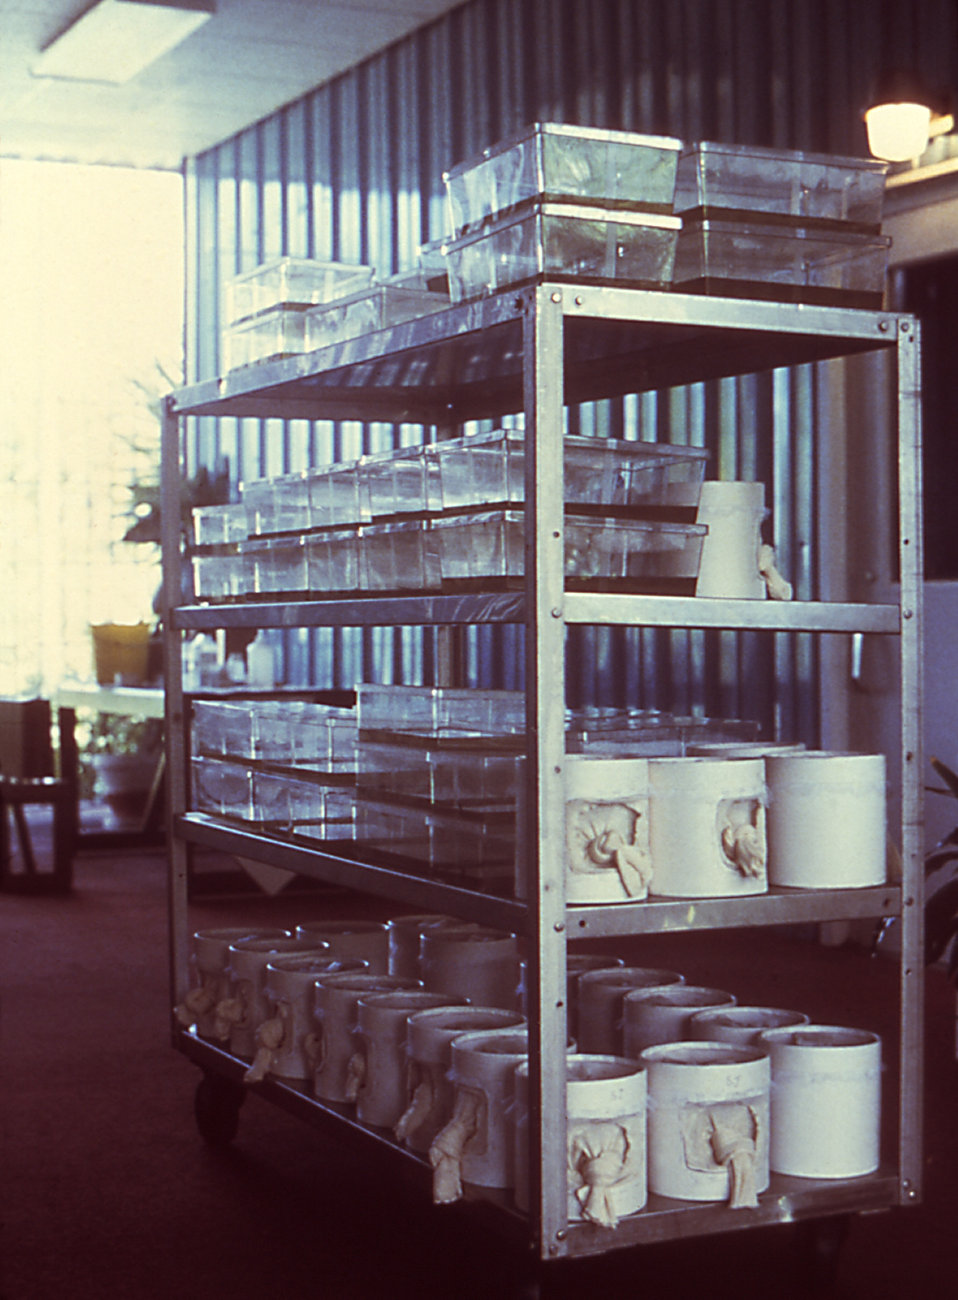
This 1981 photograph depicted an arboviral research center makeshift 'insectary', in which mosquitoes were raised that would later be analyzed using bioassay testing methods.